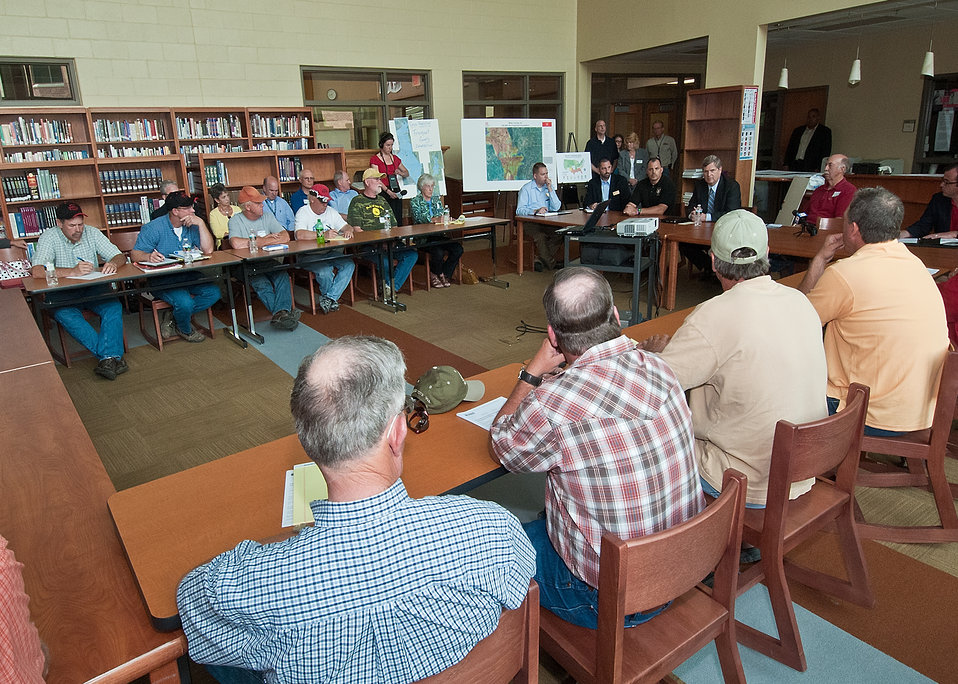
Agriculture Secretary Tom Vilsack held a town hall meeting at the Glenwood Community High School in Glenwood, Iowa on Thursday, June 16, 2011. Farmers, local and regional media listened and questioned Secretary Vilsack on the cause of the floodwaters along the Missouri River affecting Iowa and Nebraska. Secretary Vilsack offered advice and assistance available through the United States Department of Agriculture and other federal agencies.